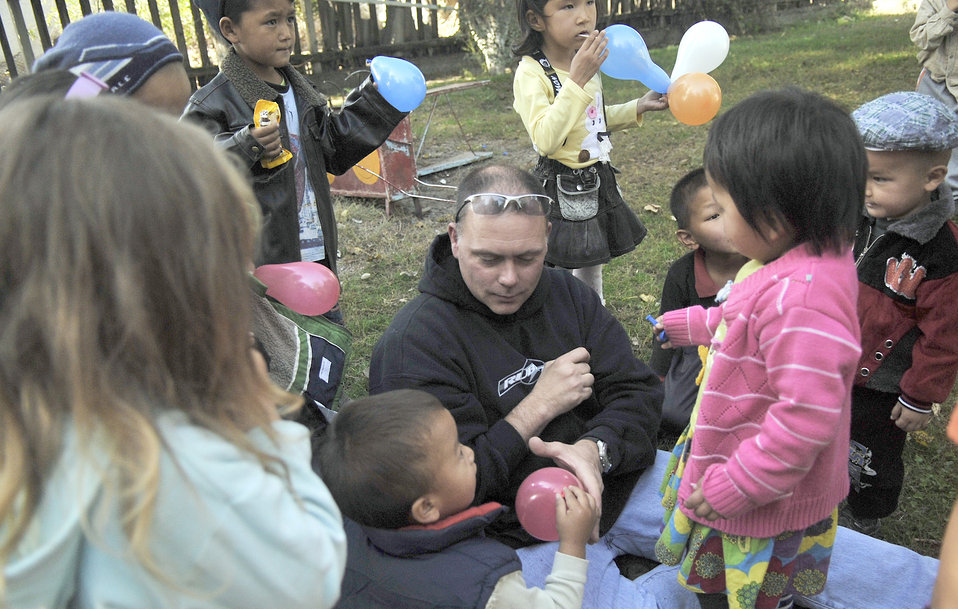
Kyrgyzstan school

Tech. Sgt. Joe Corder fills balloons for kids Oct. 18, 2010, at the Solnyshko school near Vasilievka, Kyrgyzstan. Several Airmen who are deployed to the Manas Transit Center, Kyrgyzstan, visited the school to deliver cold weather items and spend time with the kids.